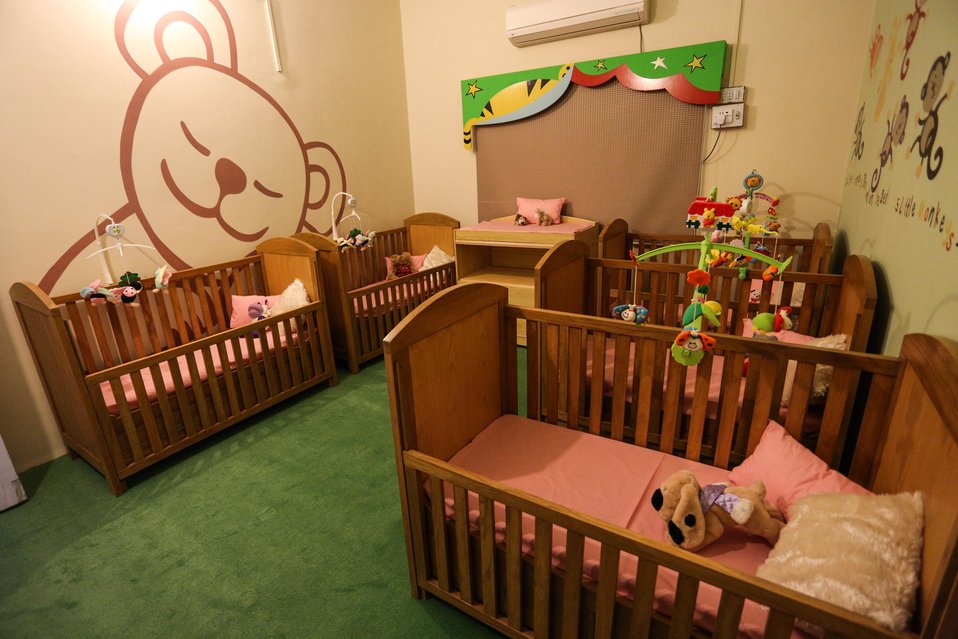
The United States Supports a Day Care Center at MEPCO

Inside view of the MEPCO daycare center.